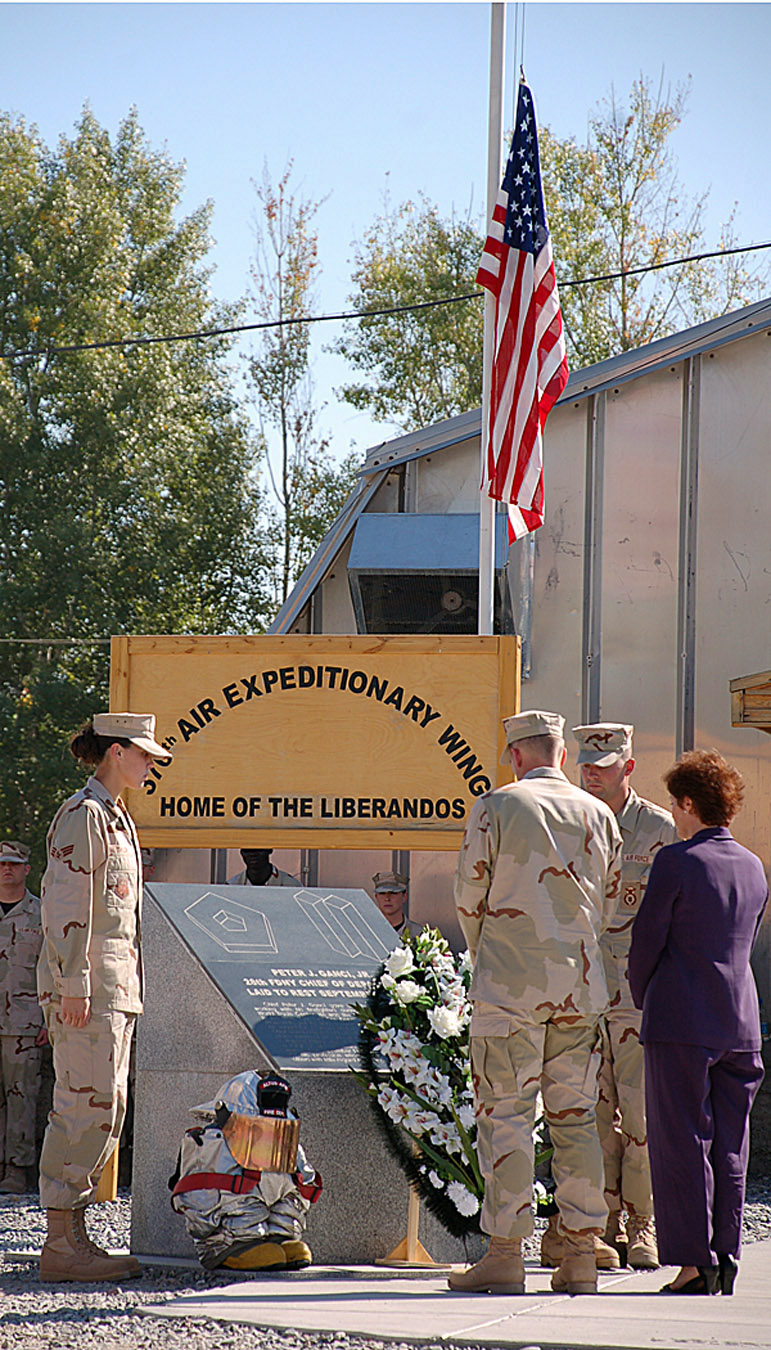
Manas Airmen remember Sept. 11

Col. Harrison Smith and the U.S. Ambassador to the Kyrgyz Republic Marie L. Yovanovitch reflect with Airman First Class Jessica Taylor and Staff Sgt. Dustin Woodworth at Manas Air Base, Kyrgyzstan, Sept. 11 at the memorial for Peter J. Ganci, the New York fire chief who gave his life coordinating the rescue response to the World Trade Center attack six years ago. Many locals still refer to the American military base in Kyrgyzstan as Ganci Air Base. The base continues to support the ongoing operations in Afghanistan as a logistics hub for the effort, providing aerial refueling with its squadron of KC-135 Stratotankers and supporting cargo and passenger movement to and from the country. Colonel Harrison is commander of the 376th Air Expeditionary Wing. Airman Taylor is a firefighter with the 376th Expeditionary Civil Engineer Squadron. Sergeant Woodworth is a defender with the 376th Expeditionary Security Forces Squadron.